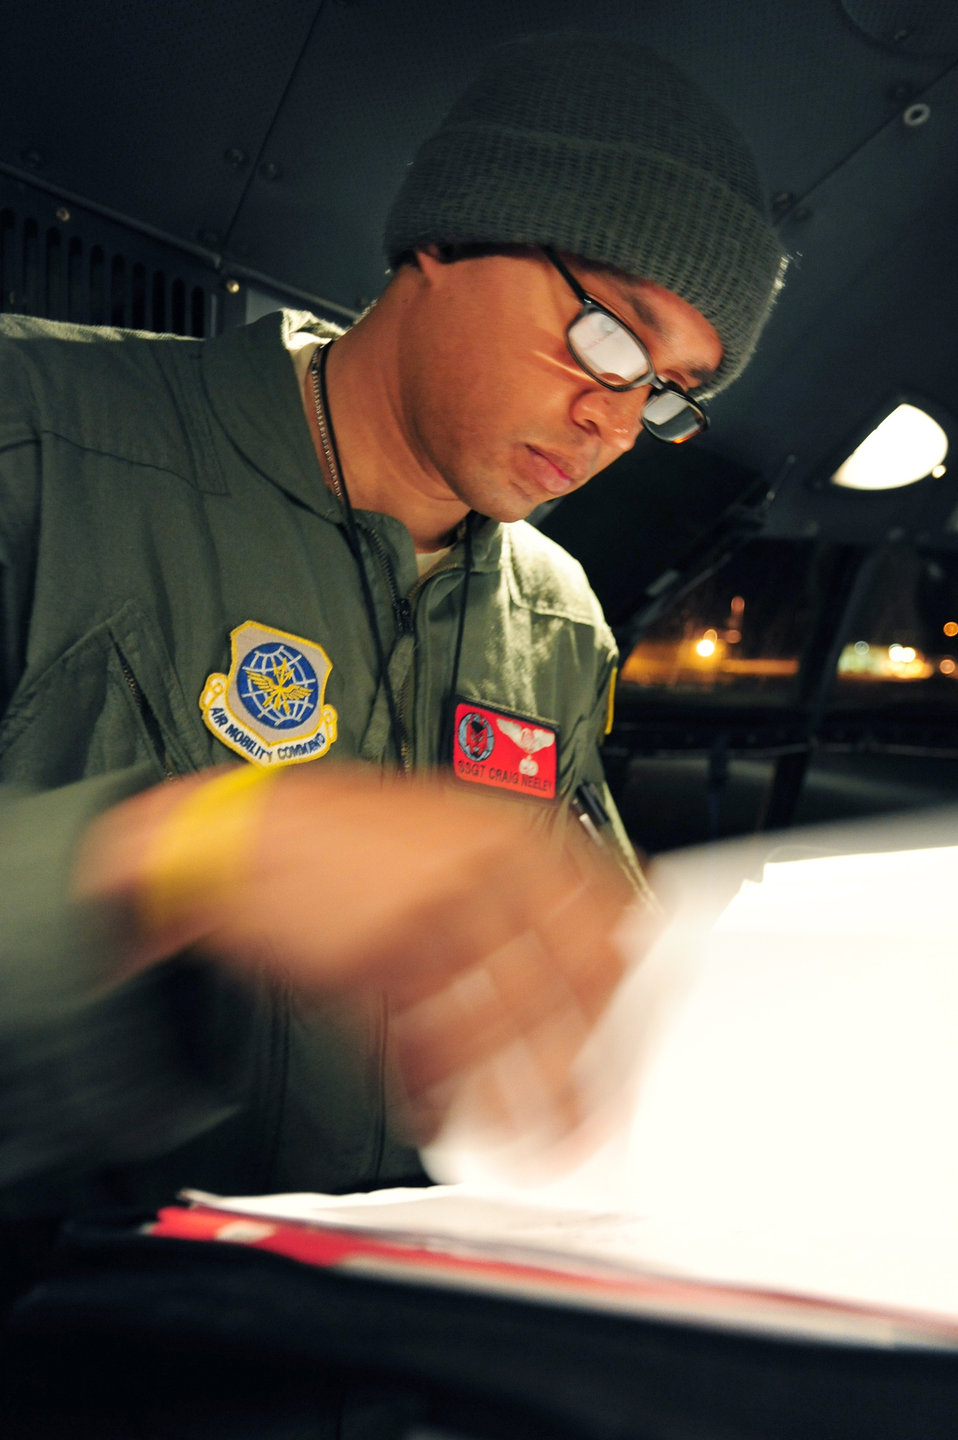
Staff Sgt. Craig Neeley monitors the flight systems on a C-130H Hercules during a Joint Operational Access Exercise Feb. 14, 2011, at Pope Air Force Base, N.C. The exercise trains Soldiers and Airmen to deploy at a moment's notice and sustain the mission anywhere in the world. Sergeant Neeley is a 50th Airlift Squadron flight engineer.